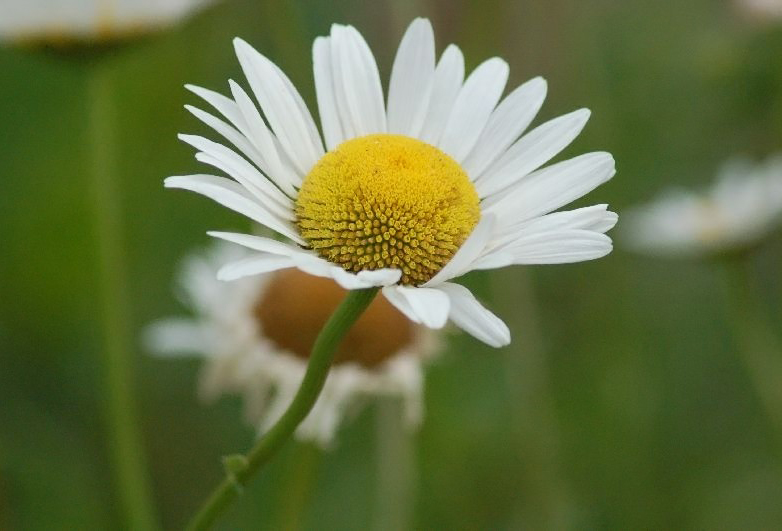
Picture taken by me